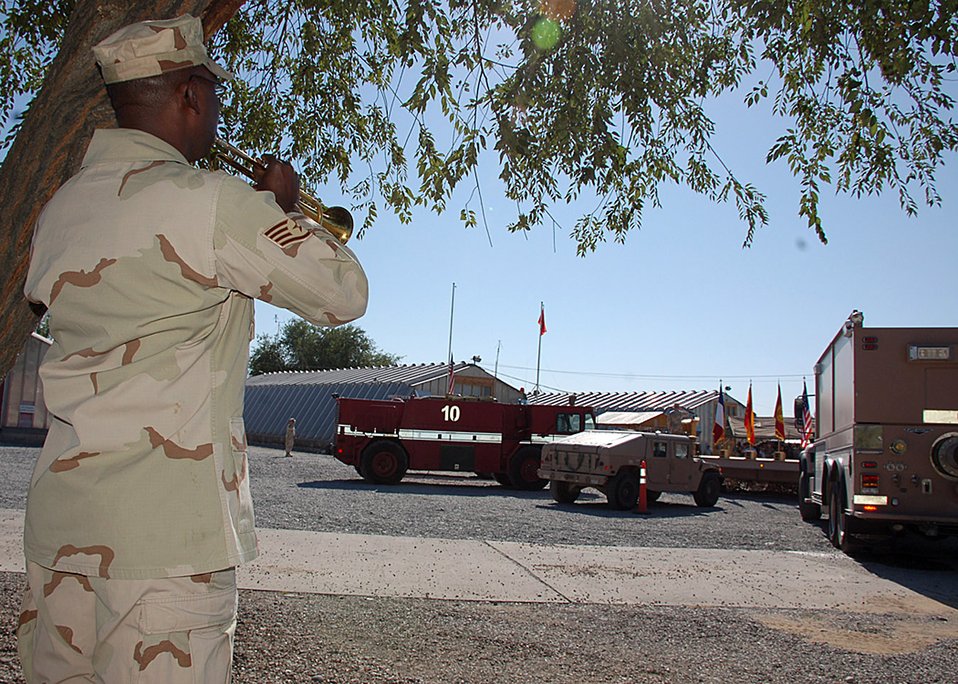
Manas Airmen remember Sept. 11

Staff Sgt. Calvin Charles plays